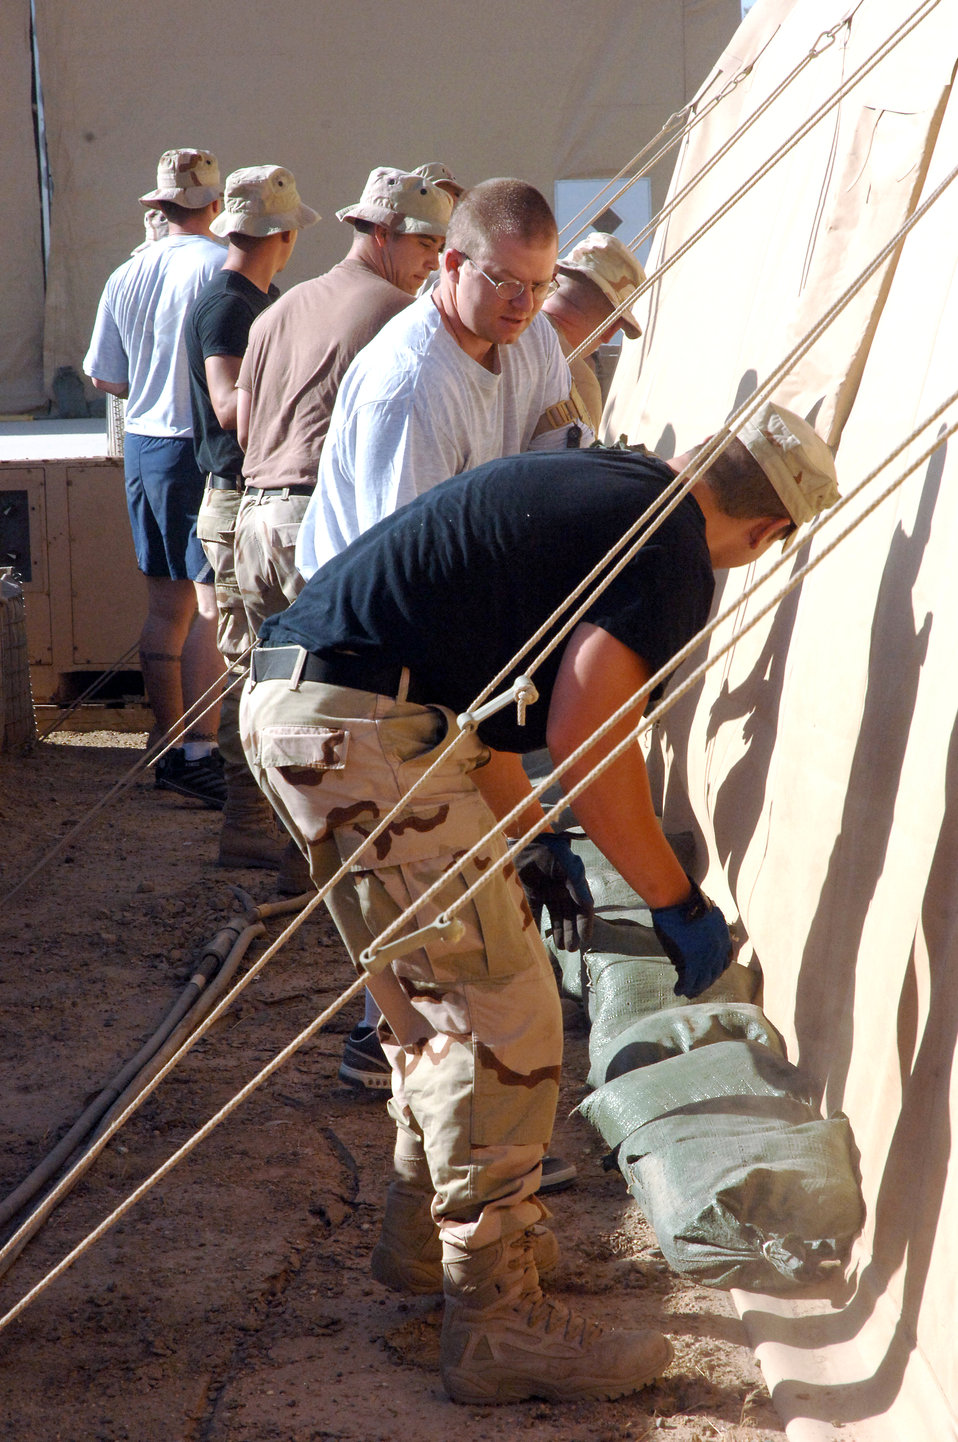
Fightin' the desert heat

More than 50 Airmen from the 447th Air Expeditionary Group at Sather Air Base, Iraq, teamed up on Wednesday, June 7, 2006, to sandbag their recreation center to keep the cool air inside from escaping. Sather AB is located at Baghdad International Airport.